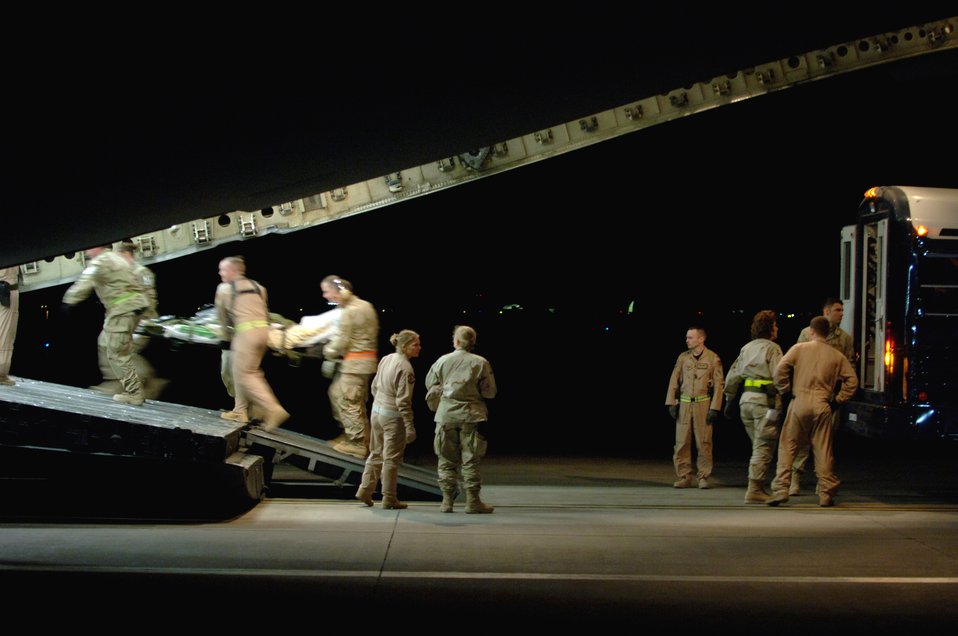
Staging facility prepares injured warfighters for flight

Airmen from the 332nd Medical Group Contingency Aeromedical Staging Facility and volunteers from all over the 332nd Air Expeditionary Wing load injured military members onto a C-17 Globemaster III Feb. 21 departing from Balad Air Base, Iraq, to Landstuhl, Germany, where they will receive further care for their wounds. The Contingency Aeromedical Staging Facility is a staging where patients are prepared for their flight out of Iraq.